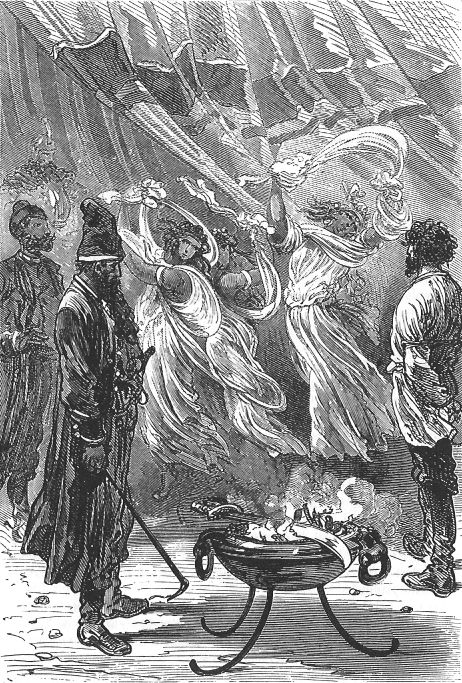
An illustration from the novel 'Michael Strogoff: The Courier of the Czar' by Jules Verne drawn by Jules Férat. Polski: Ilustracja powieści Juliusza Verne'a 'Michał Strogow, kurier carski' autorstwa Julesa Férata. Français : 'Michel Strogoff. Le courier du tzar', Jules Férat. Français : « Regarde de tous tes yeux, regarde ! »